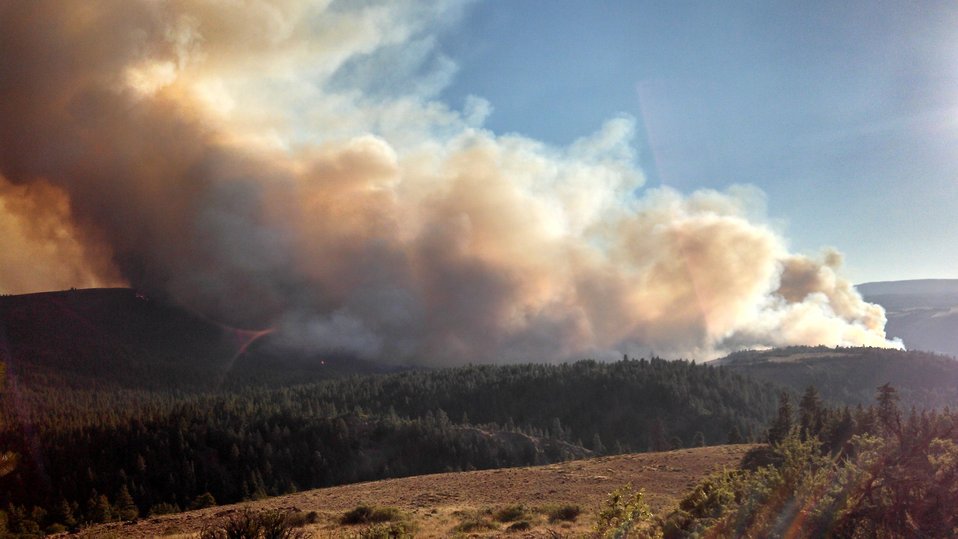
The Mile Marker 28 Fire near Goldendale, WA began on Jul. 24, 2013 is under investigation and has consumed approximately 20,337 acres. The fire is approximately 25% contained.